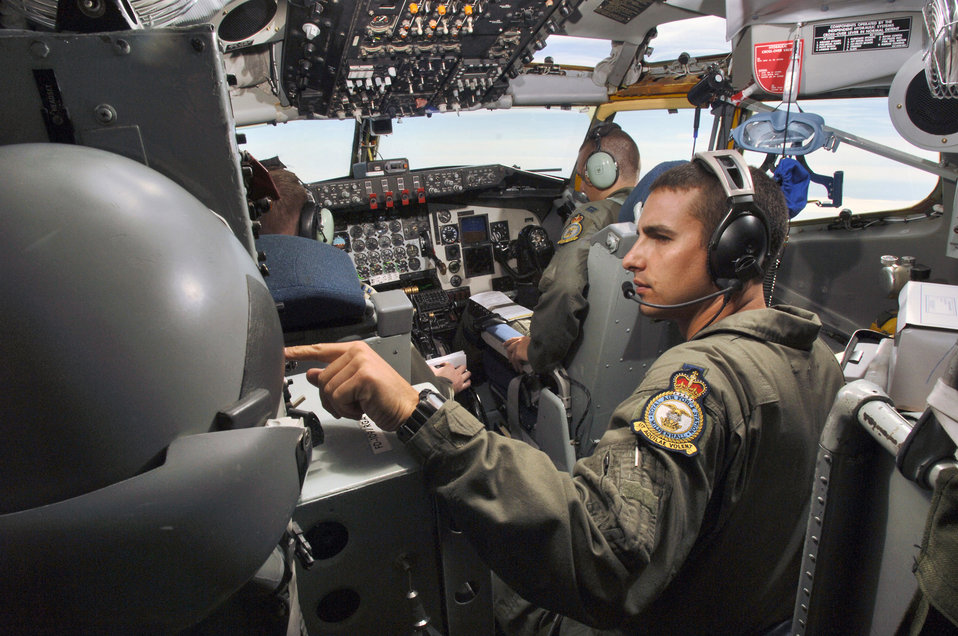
Long days, flexibility part of tanker crew's life

Capt. Joseph Petrosky (right) adjusts his intercom settings aboard a KC-135 Stratotanker on July 25. Captain Petrosky, an instructor pilot, mentored Capts. Rob Kline (left) and Sam Ensminger on the duties and responsibilities of being aircraft commanders. The 351st Air Refueling Squadron aircrew launched from Royal Air Force Mildenhall, England, and refueled six Belgian F-16 Fighting Falcons over the North Sea participating in exercise Wycombe Warrior.